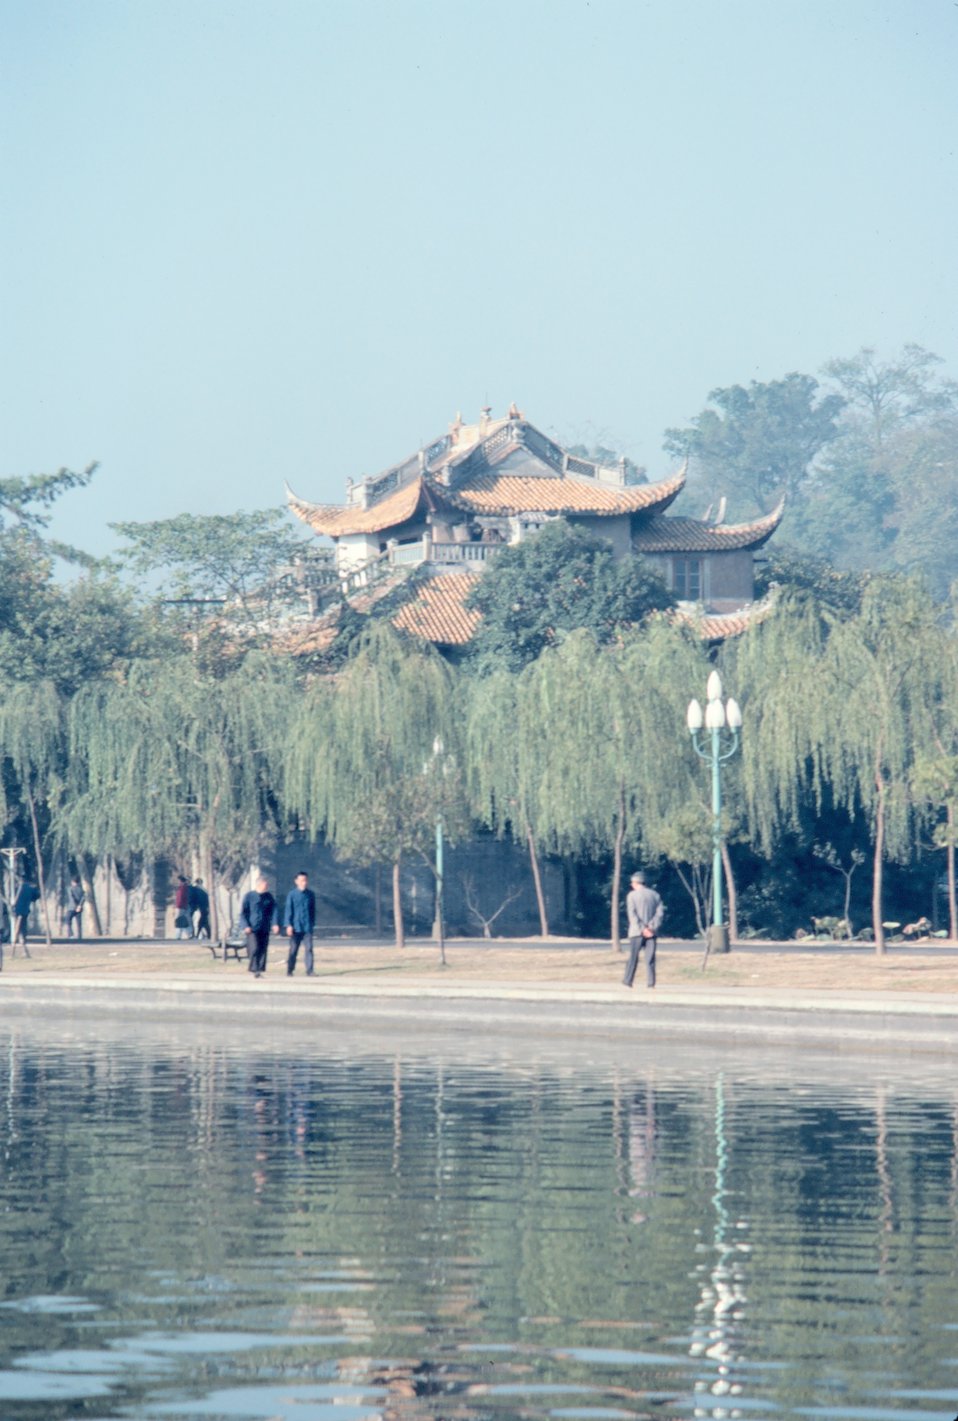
Pool surrounding the Forbidden City.